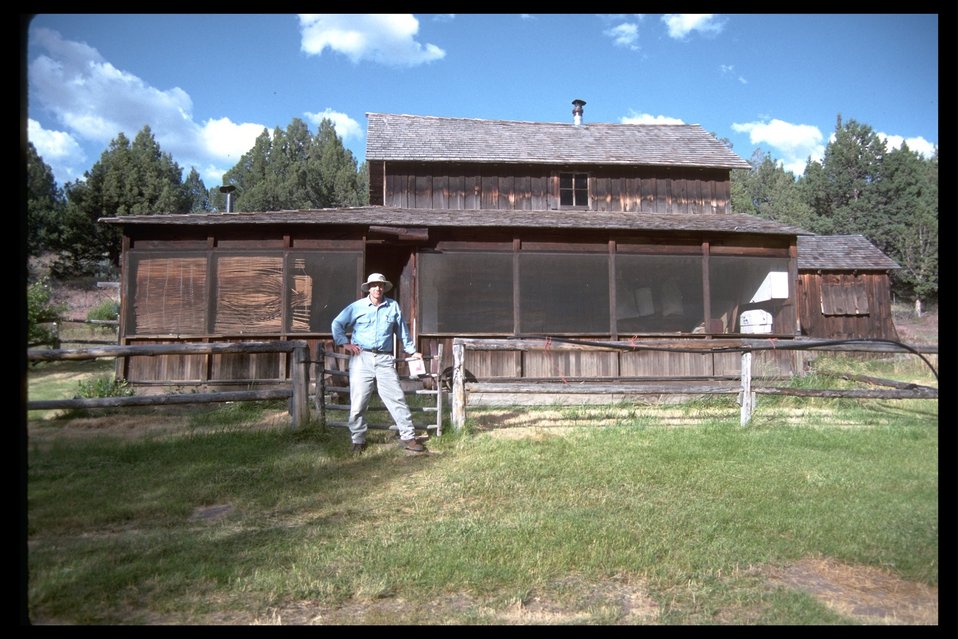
General Riddle Brother's Ranch with Dave Harmon.